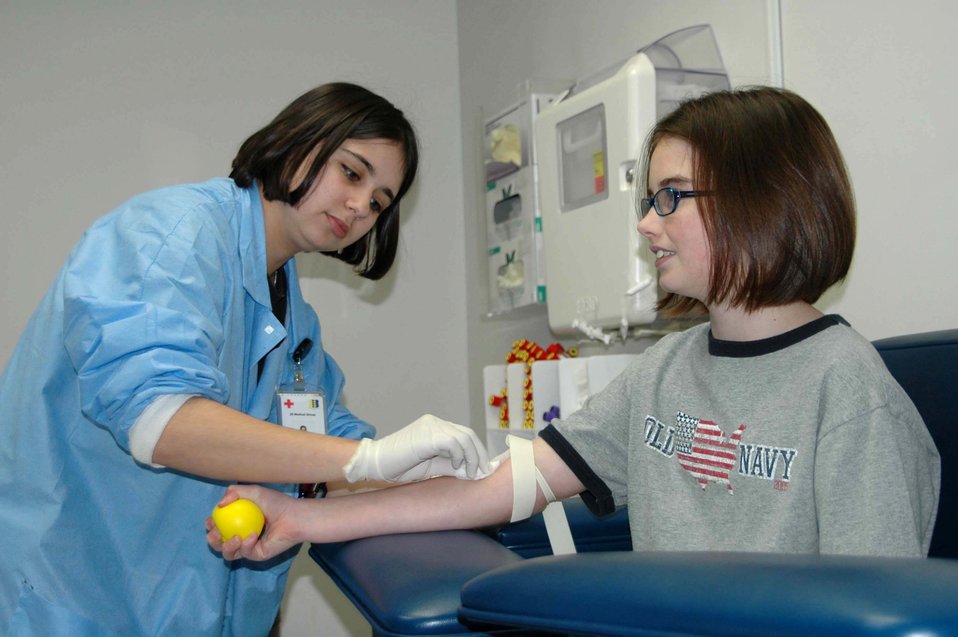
College of American Pathologists lauds Ellsworth lab

Airman 1st Class Danielle Woodcock prepares to draw some blood Dec. 19 from Donna Haugh, age 10, daughter of Master Sgt. and Mrs. Peter Haugh. Airman Woodcock is a medical laboratory technician assigned to the 28th Medical Support Squadron at Ellsworth Air Force Base, S.D. The lab recently was accredited by the College of American Pathologists